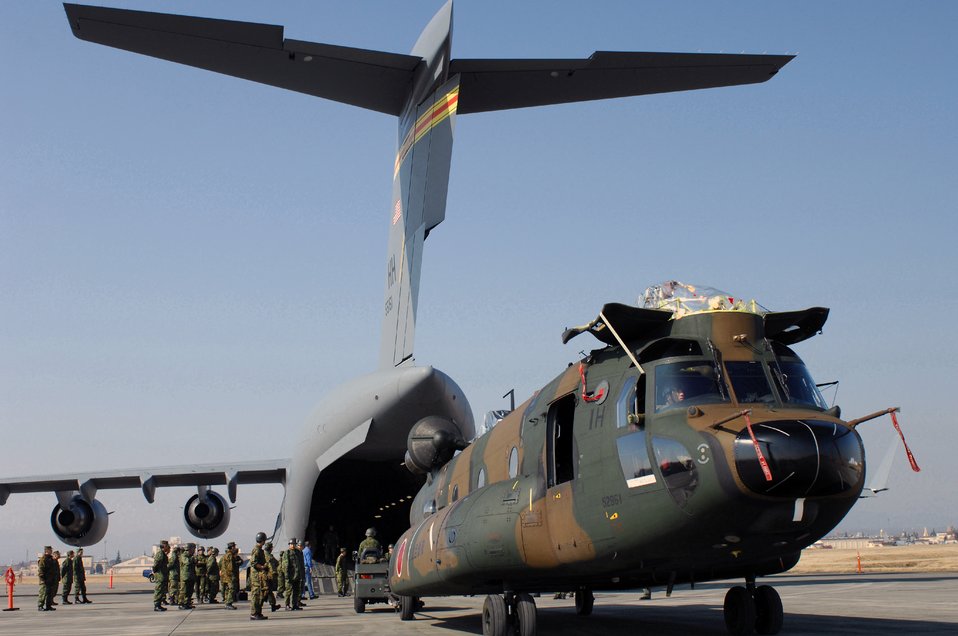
Airmen load Japanese helicopter into U.S. plane

A Japan Ground Self Defense Force CH-47J Chinook is loaded onto a C-17 Globemaster III cargo plane Feb. 23 at Yokota Air Base, Japan. The demonstration was conducted the during the Pacific Global Air Mobility Seminar held Feb. 22 and 23. The CH-47J is assigned to the 1st Helicopter Brigade at JGSDF Camp Kisarazu in Kisarazu City, Chiba Prefecture, and the C-17 is assigned to the 535th Airlift Squadron at Hickam Air Force Base, Hawaii.